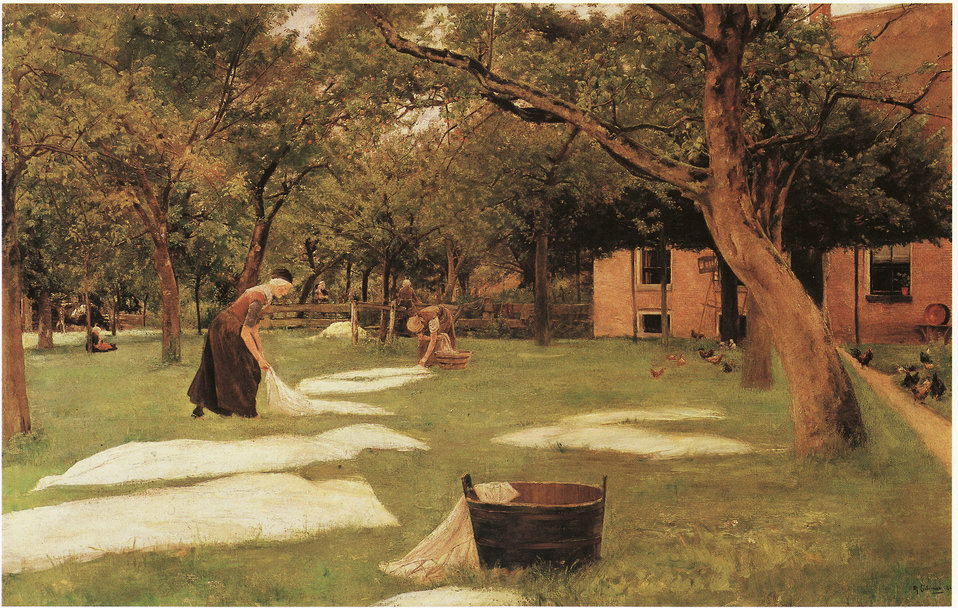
Die Rasenbleiche